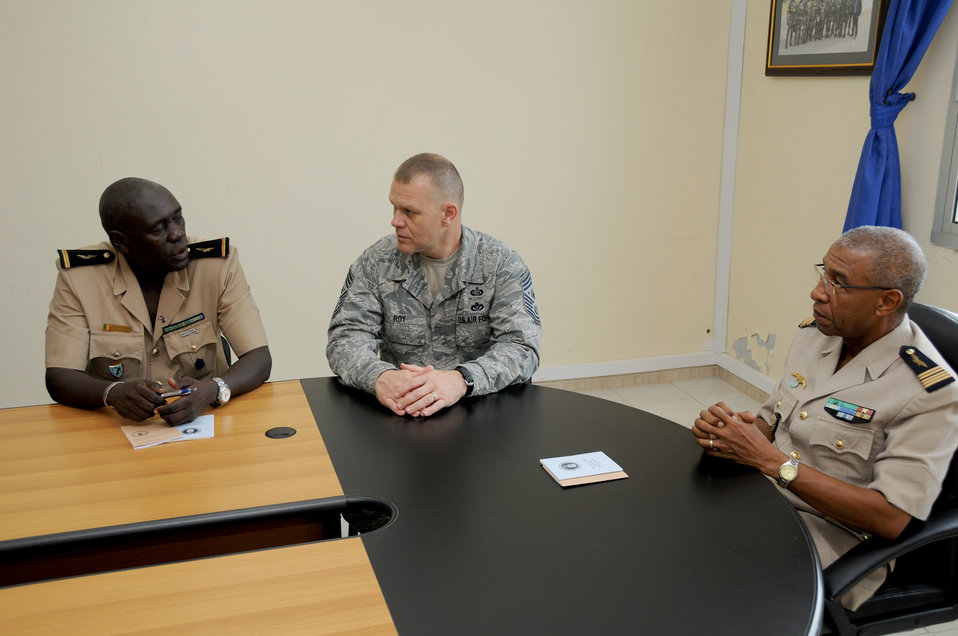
CMSAF in Senegal

Chief Master Sgt. of the Air Force James A. Roy meets with the Senegalese air force's top leaders during an office call Oct. 15, 2010, in Dakar, Senegal. He discussed enlisted force development with their adjutant chief, Warrant Officer 1 Babacar Ndiaye (left) and chief of staff, Col. Alain Pereira. This was his third stop on a visit to Africa.